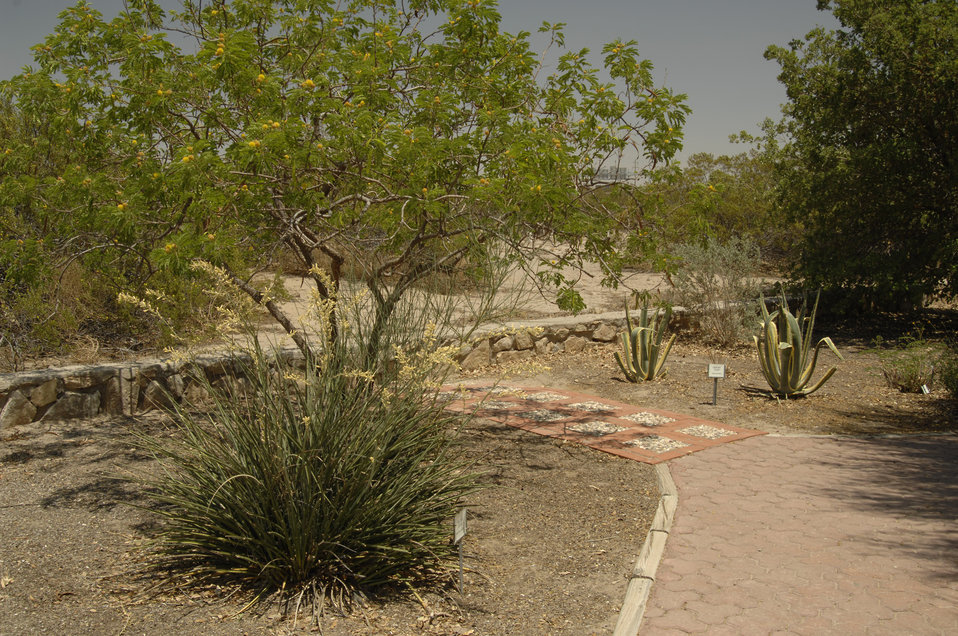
A High Desert Cactus Garden is created at Texas AgriLife Research & Extension Center in El Paso, Texas on June 2, 2008. The cactus garden is a wonderful way to showcase High Desert native and adapted plants while creating a low-water use and low maintenance landscape.